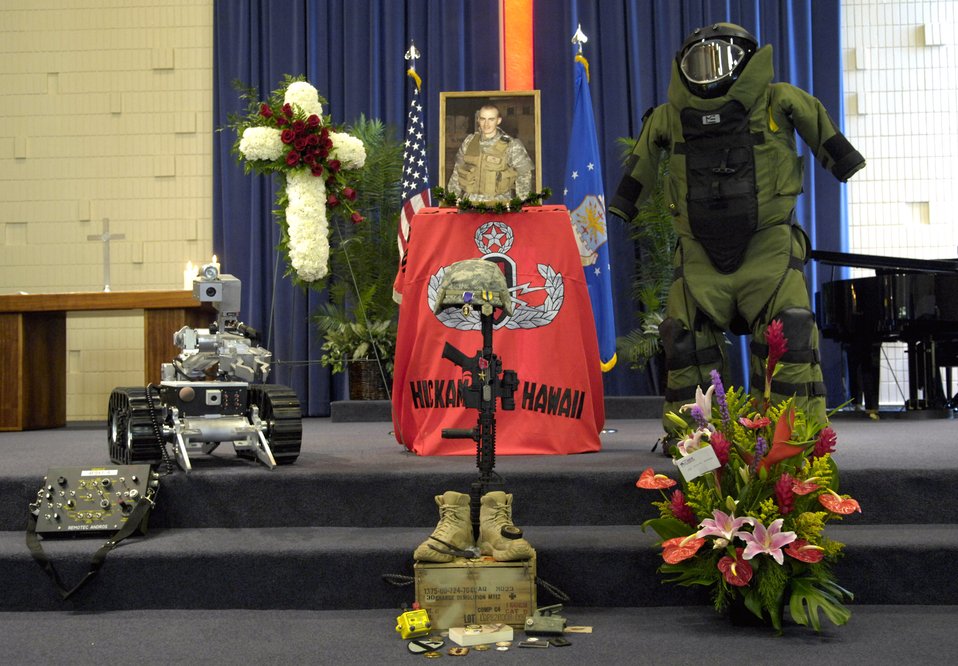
Solemn service

A tribute is displayed during a memorial service honoring Senior Airman William Newman at the base chapel June 13 at Hickam Air Force Base, Hawaii. Airman Newman, an explosive ordnance disposal technician assigned to the 15th Civil Engineer Squadron, was killed June 7 by an improvised explosive device, which detonated while he was supporting Army and Iraqi security forces near Mishna, Iraq.